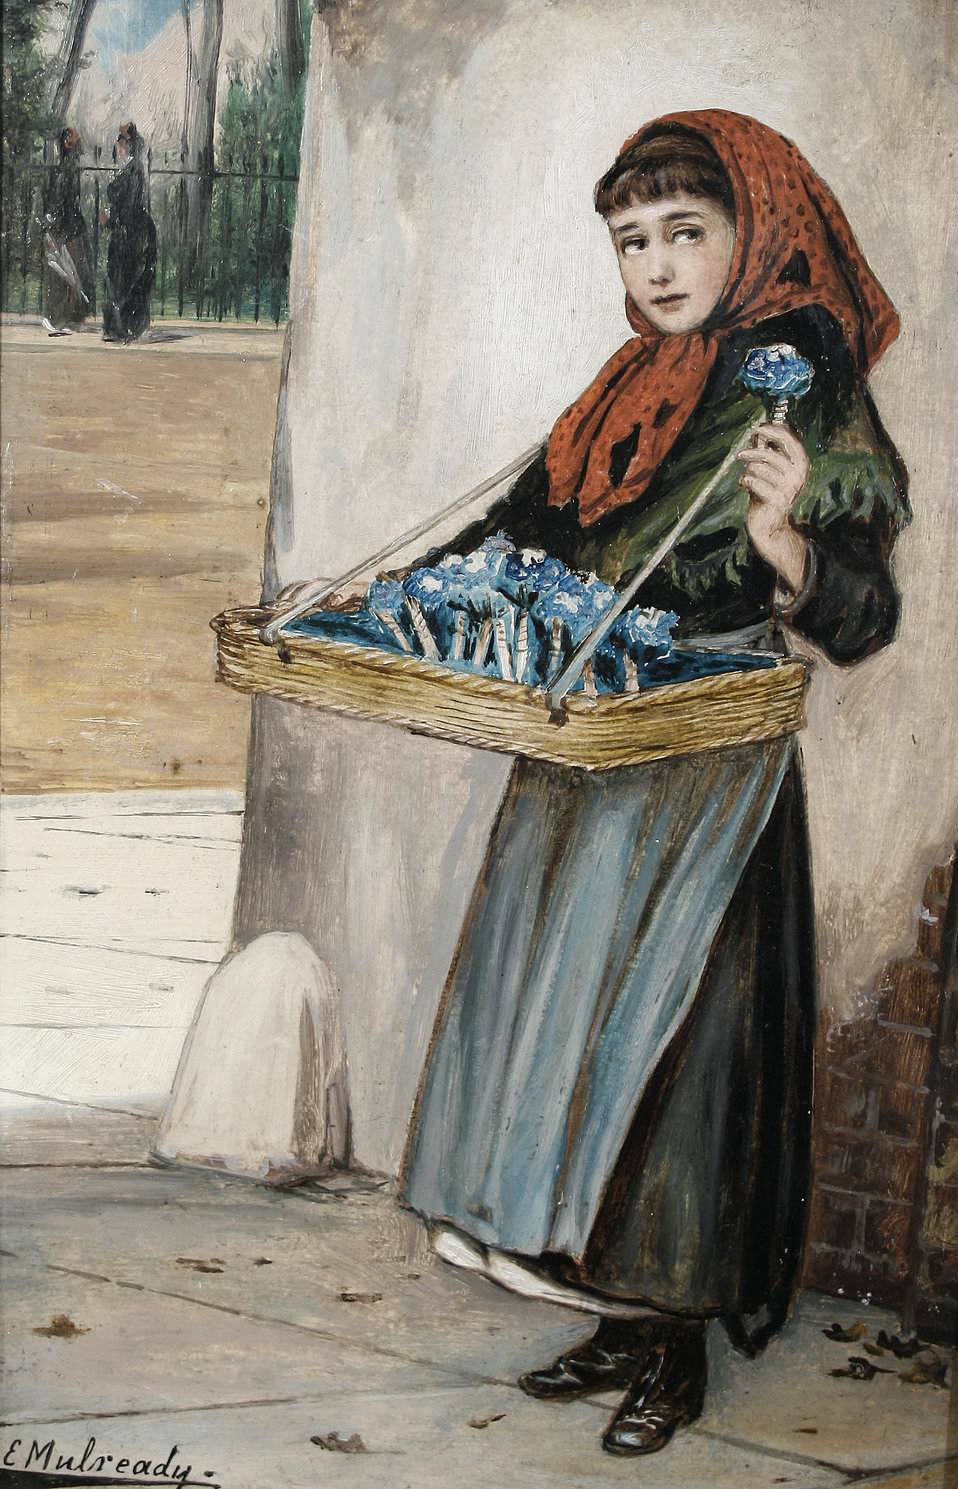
Augustus Edwin Mulready An Eye to an Expected Buyer